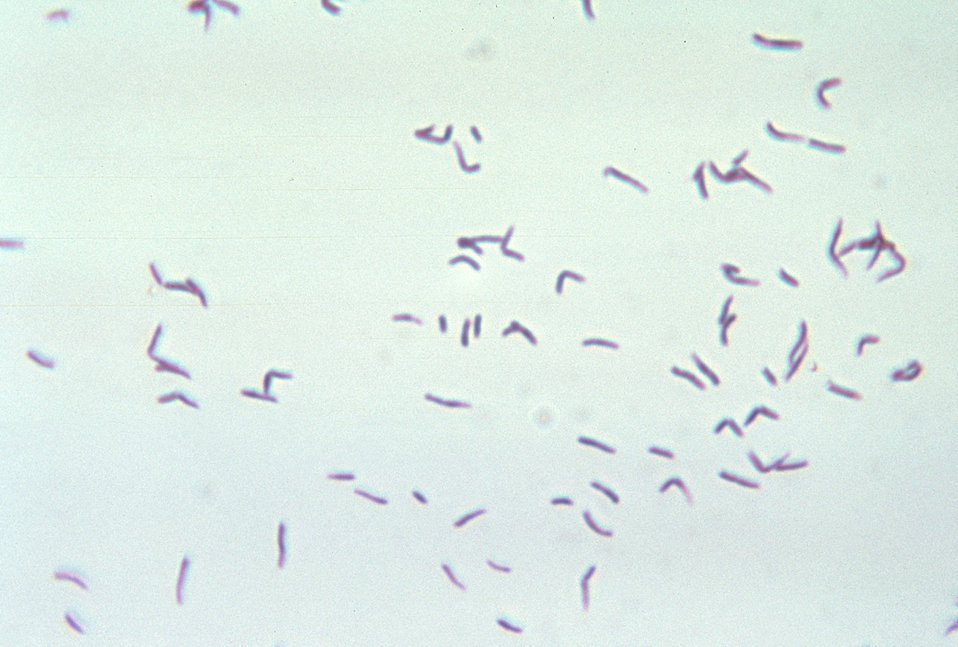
This micrograph depicts the gram-positive bacterium Eubacterium alactolyticum grown in blood agar for 48 hours.